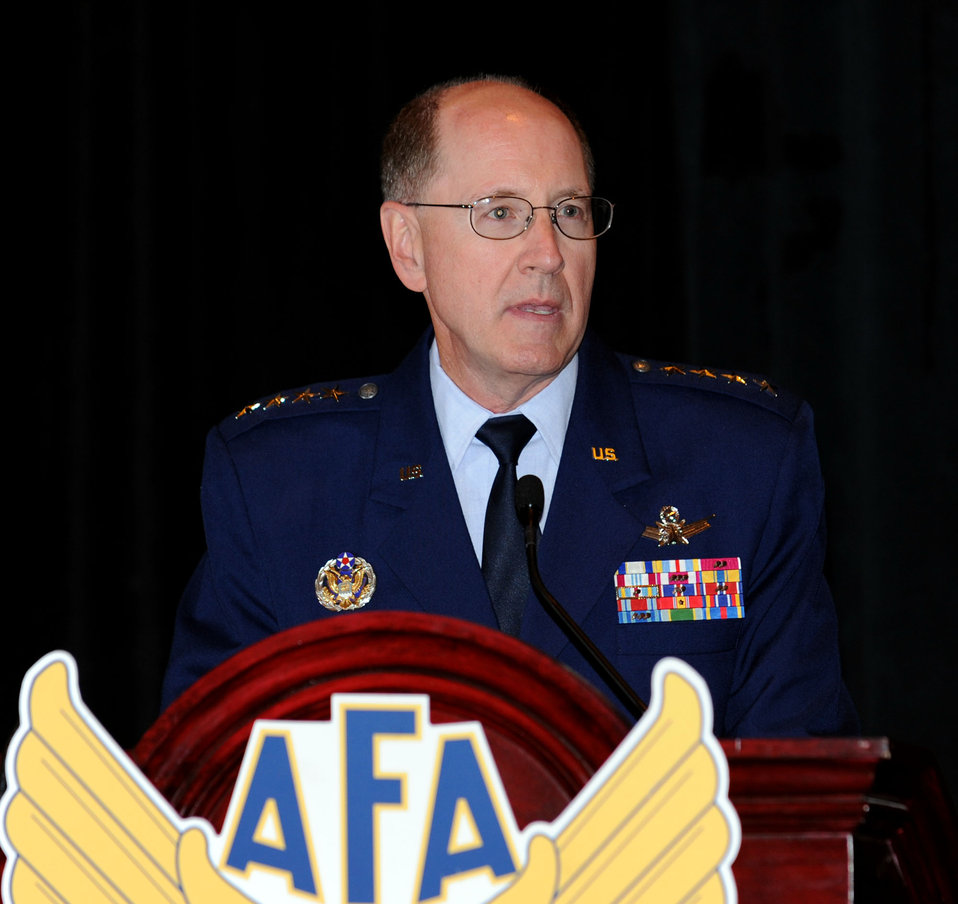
AFA

Gen. C. Robert Kehler, commander of Air Force Space Command, discusses space and cyberspace Sept. 14, 2010, at the Air Force Association Air and Space Conference and Exposition at National Harbor in Oxon Hill, Md.